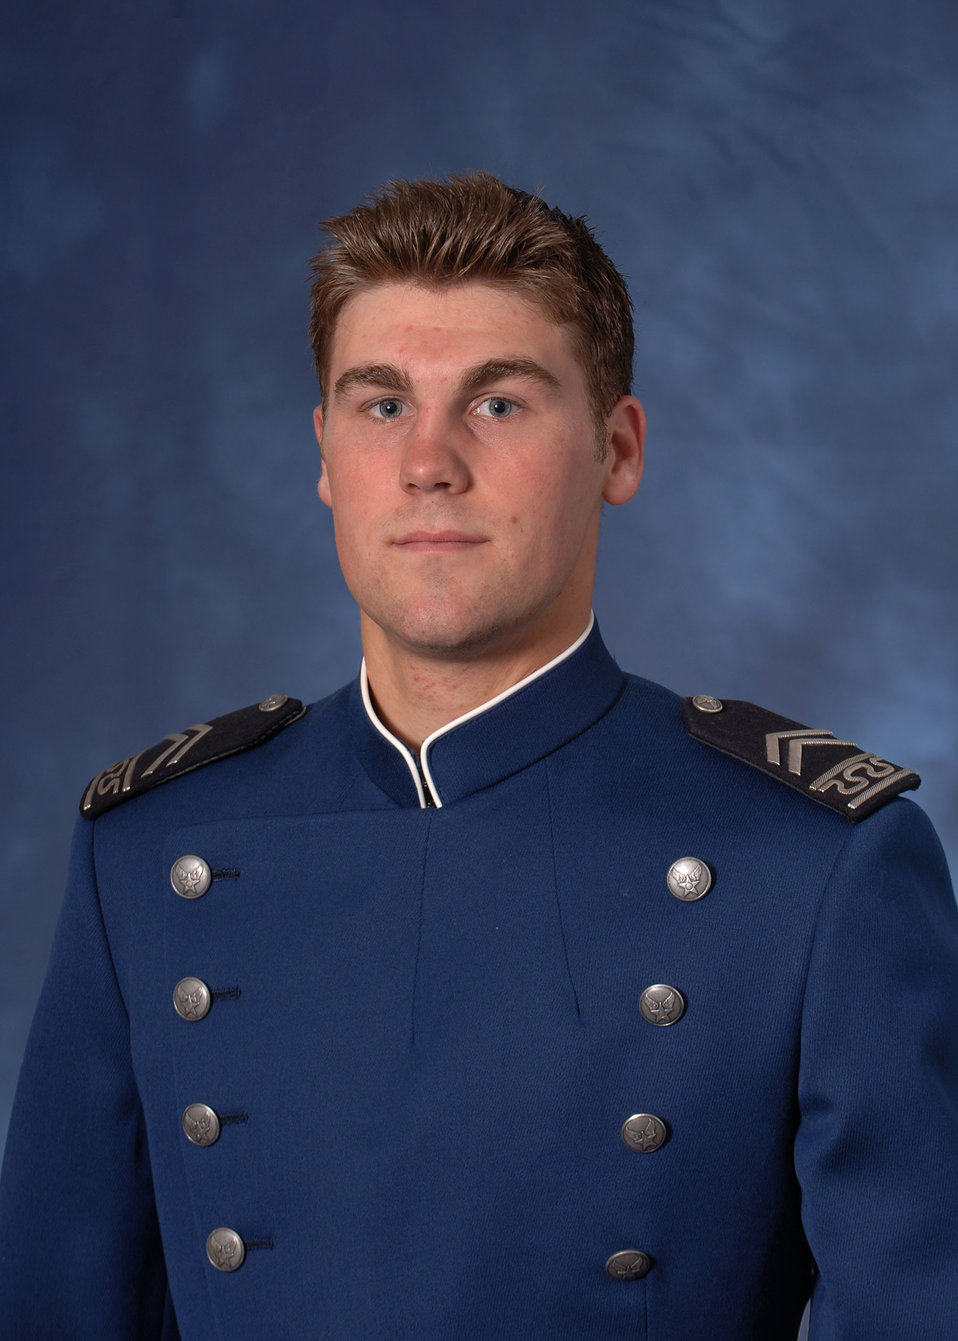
History of excellence

The player of the week honor is the third of Eric Ehn’s career as he earned offensive player of the week honors twice last season in the CHA.